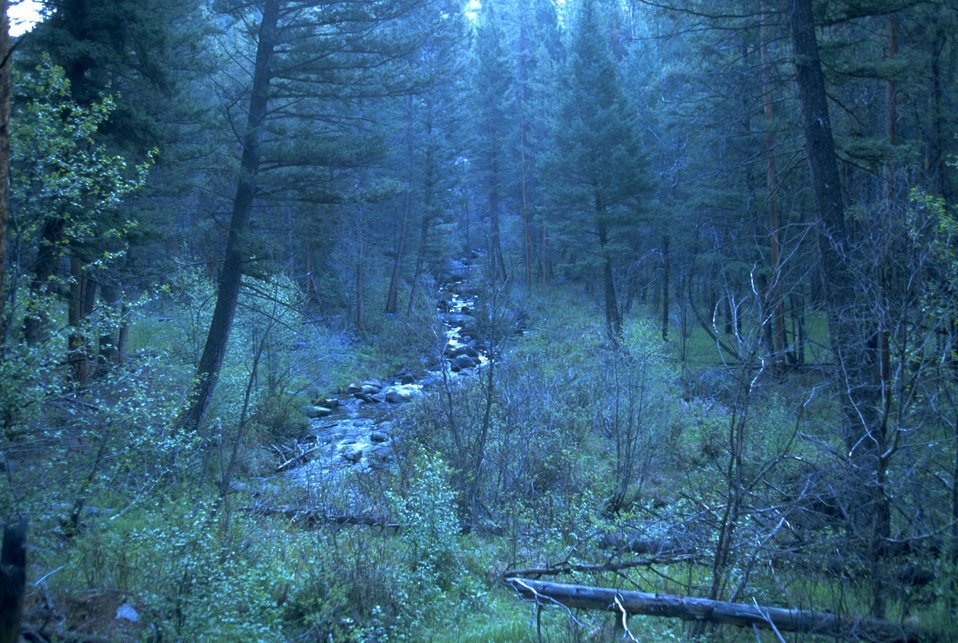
Moose Creek flowing among the foliage